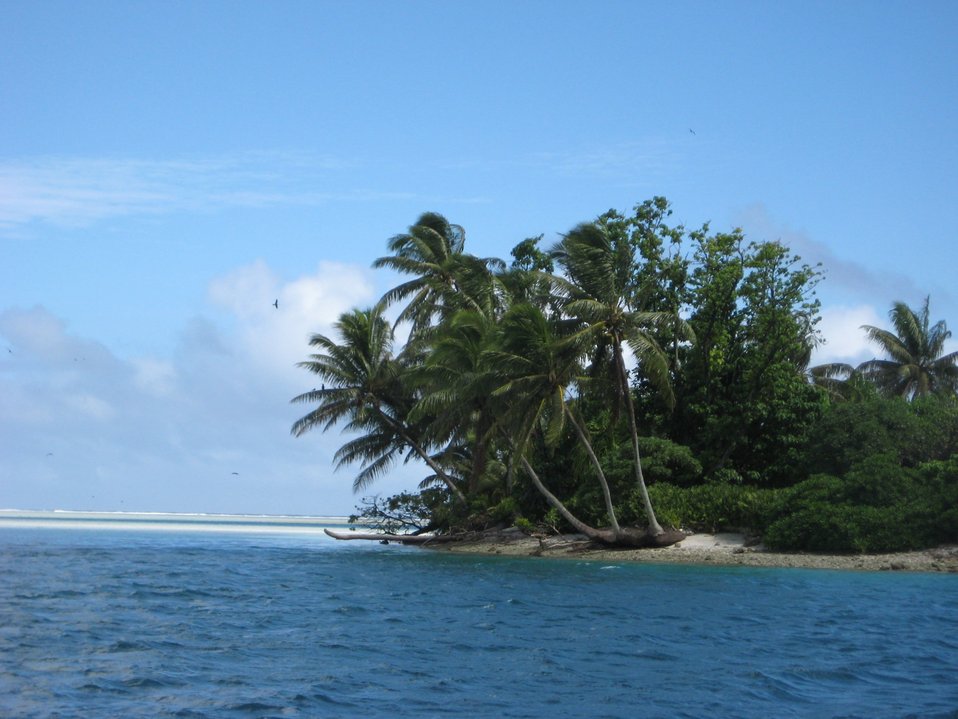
A tropical islet with palm fronds oriented in the direction of the prevailing winds.